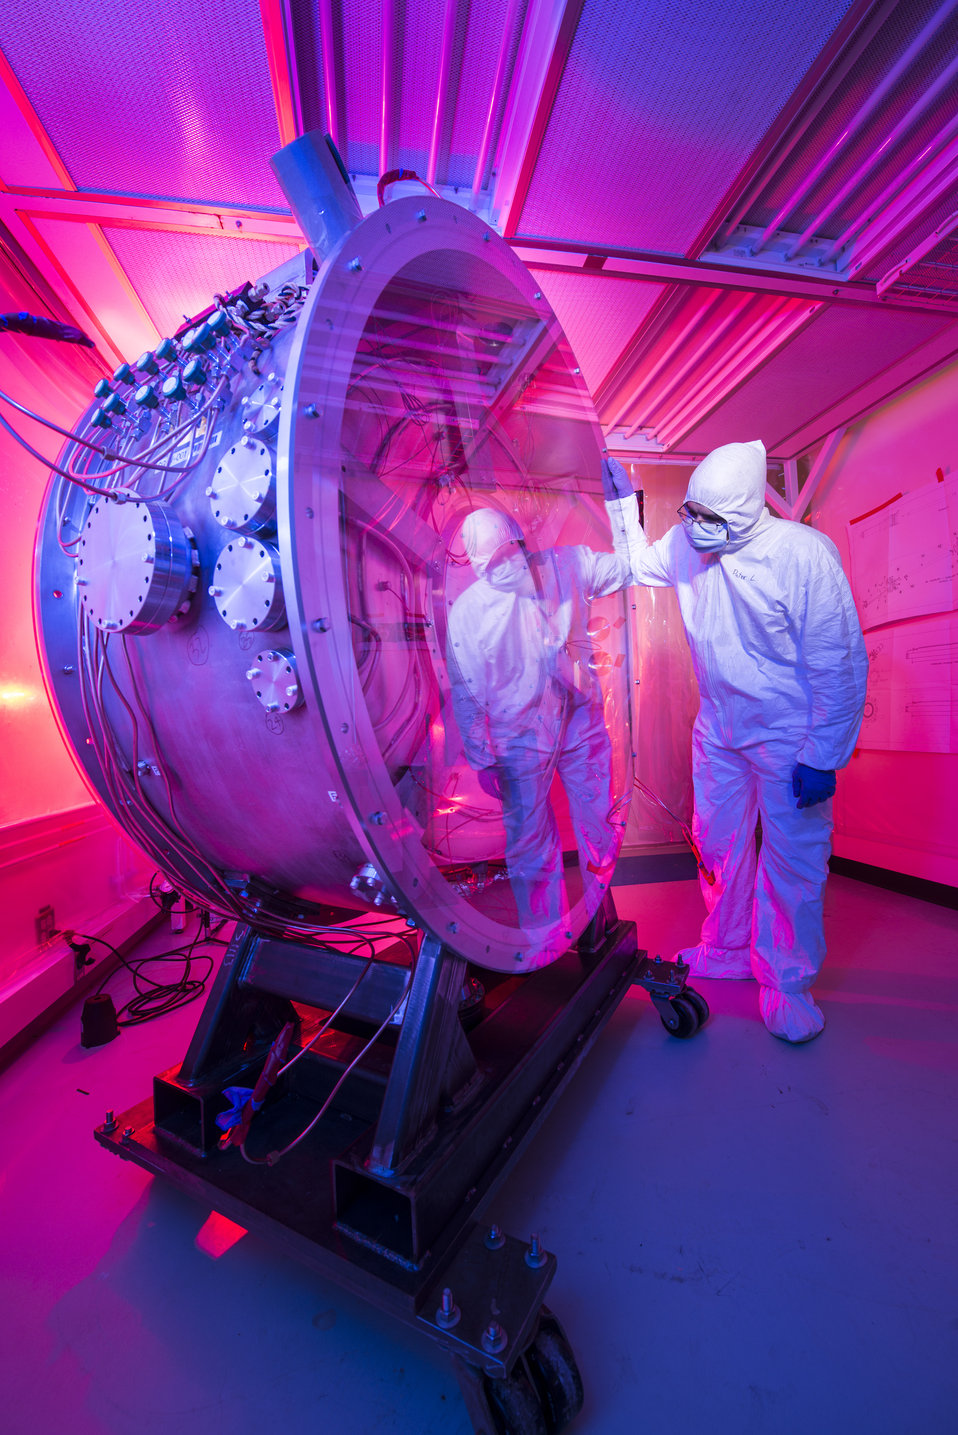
MICE SINGLE CAVITY TEST STAND AT LAB 6 AT THE FERMI NATIONAL ACCELERATOR LABORATORY.